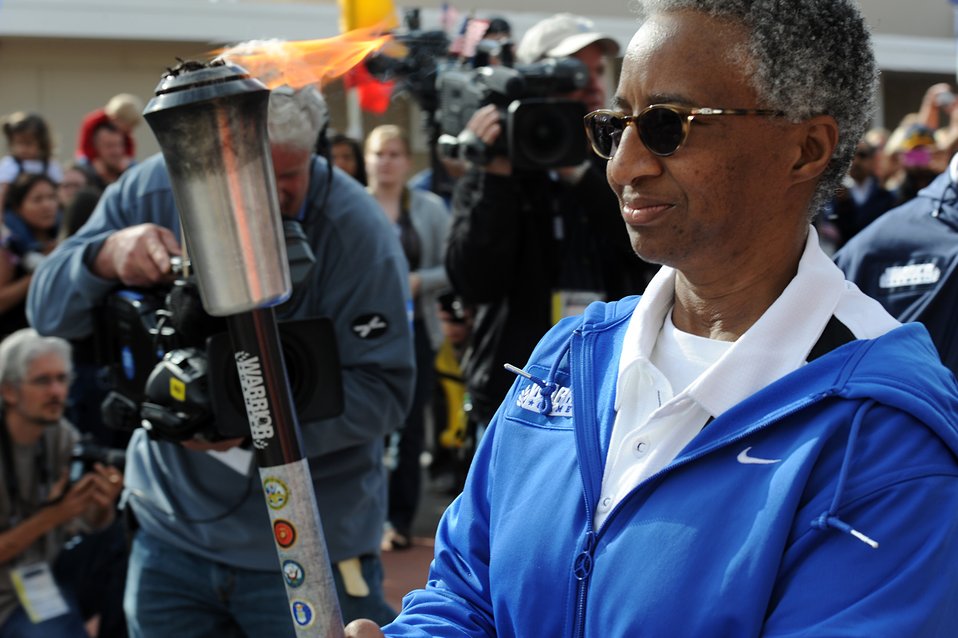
Opening Ceremony

Retired Maj. Gwen M. Sheppard marches down Olympic Path to a cheering crowd during the opening ceremony of the 2011 Warrior Games May 16, 2011, at the U.S. Olympic Training Center in Colorado Springs, Colo. Some 200 wounded warriors and disabled veterans from all the military services are competing in paralympic-style athletic events May 16 through May 21.